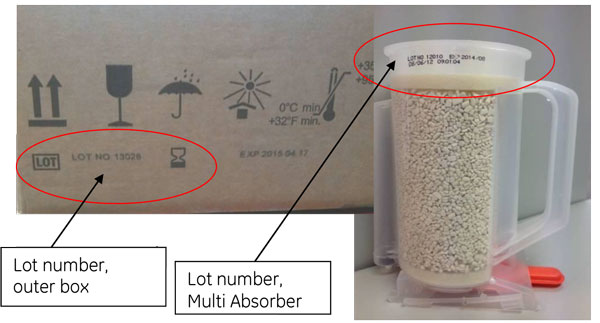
RECALLED – Multi Absorber Original

December 30, 2013 – Voluntary Field Corrective Action Initiated for Vital Signs Device’s CO2 Multi Absorber Due to a Health Risk.